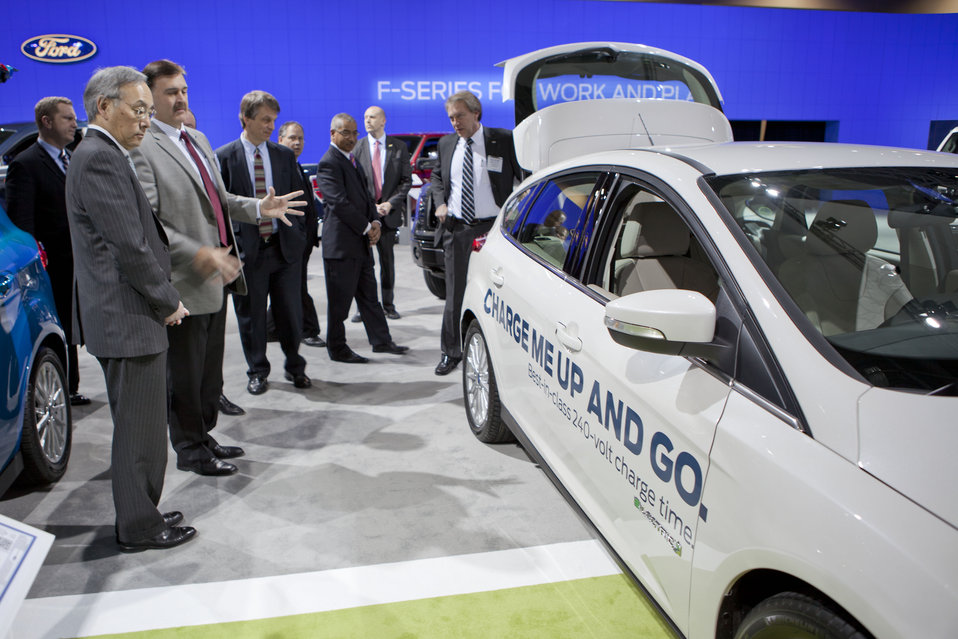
Energy Secretary Steven Chu discusses the Focus Energi with the Ford representative.